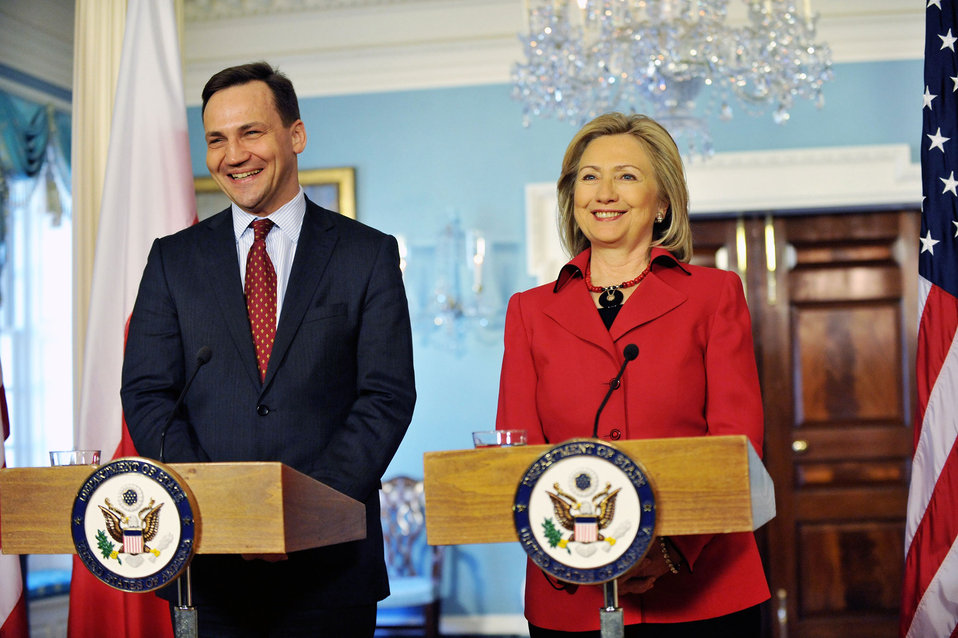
Secretary Clinton and Polish Foreign Affairs Minister Sikorski Hold a Press Conference

U.S. Secretary of State Hillary Rodham Clinton and Polish Foreign Affairs Minister Radoslaw Sikorski hold a joint press conference after their bilateral meeting at the U.S. Department of State in Washington, D.C., on March 3, 2011.